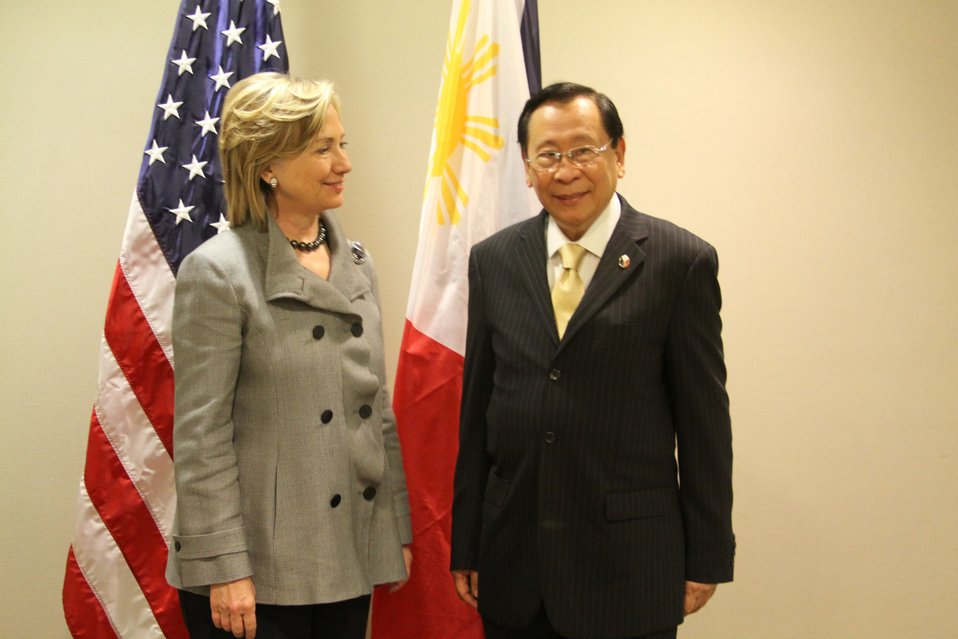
Secretary Clinton Speaks With Filipino Foreign Minister Romulo

U.S. Secretary of State Hillary Rodham Clinton speaks with Filipino Foreign Minister Alberto G. Romulo at the U.S. Mission to the United Nations, New York, New York, May 3, 2010.